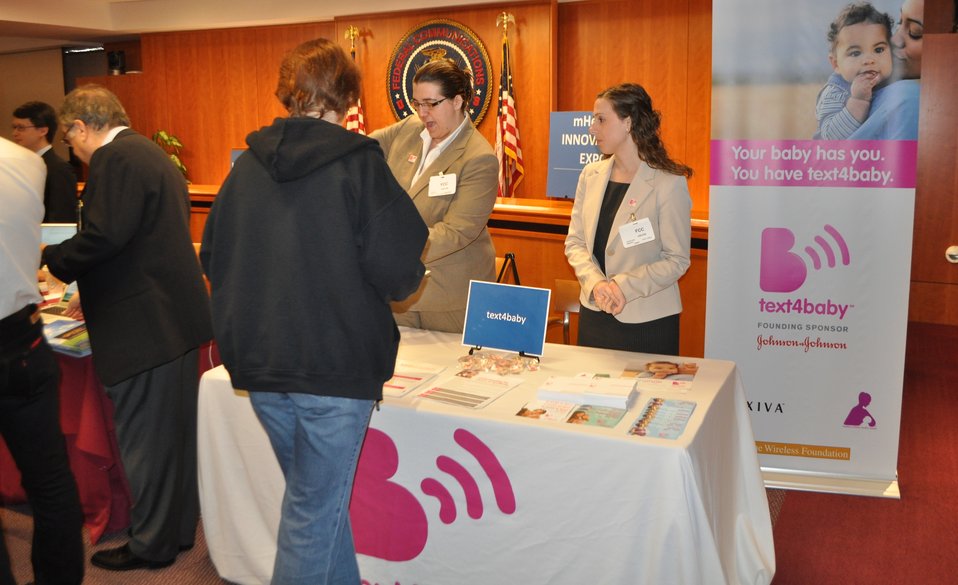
12.6.13 mHealth Innovation Expo

FCC mHealth Innovation Expo